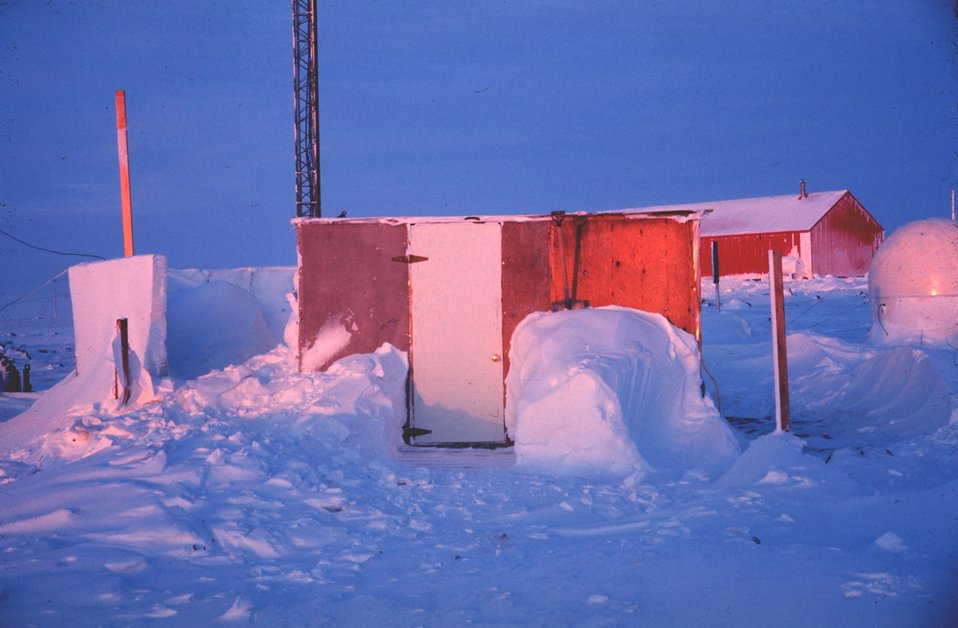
Station Number 108